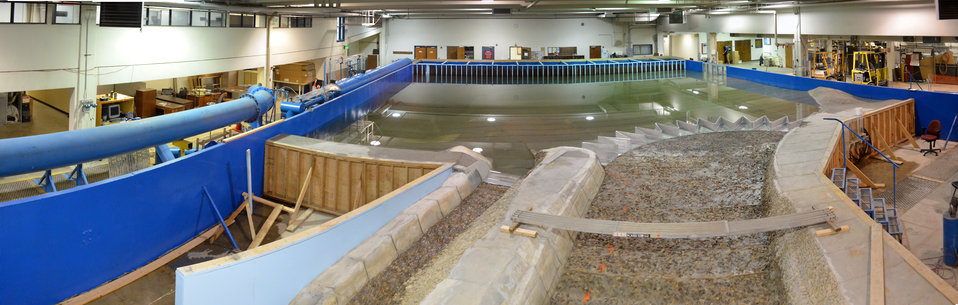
Corps tests new Isabella Dam model

A panoramic photo shows the new scale model of the U.S. Army Corps of Engineers Sacramento District’s Isabella Dam Safety Modification Project at Utah State University’s Water Research Laboratory in Logan, Utah, Feb. 12, 2014. The 1:45 scale model is an essential part of the Corps’ pre-construction engineering and design phase and allows engineers to test the design against extreme storms and improve it before construction begins. Construction is scheduled to begin in 2017.